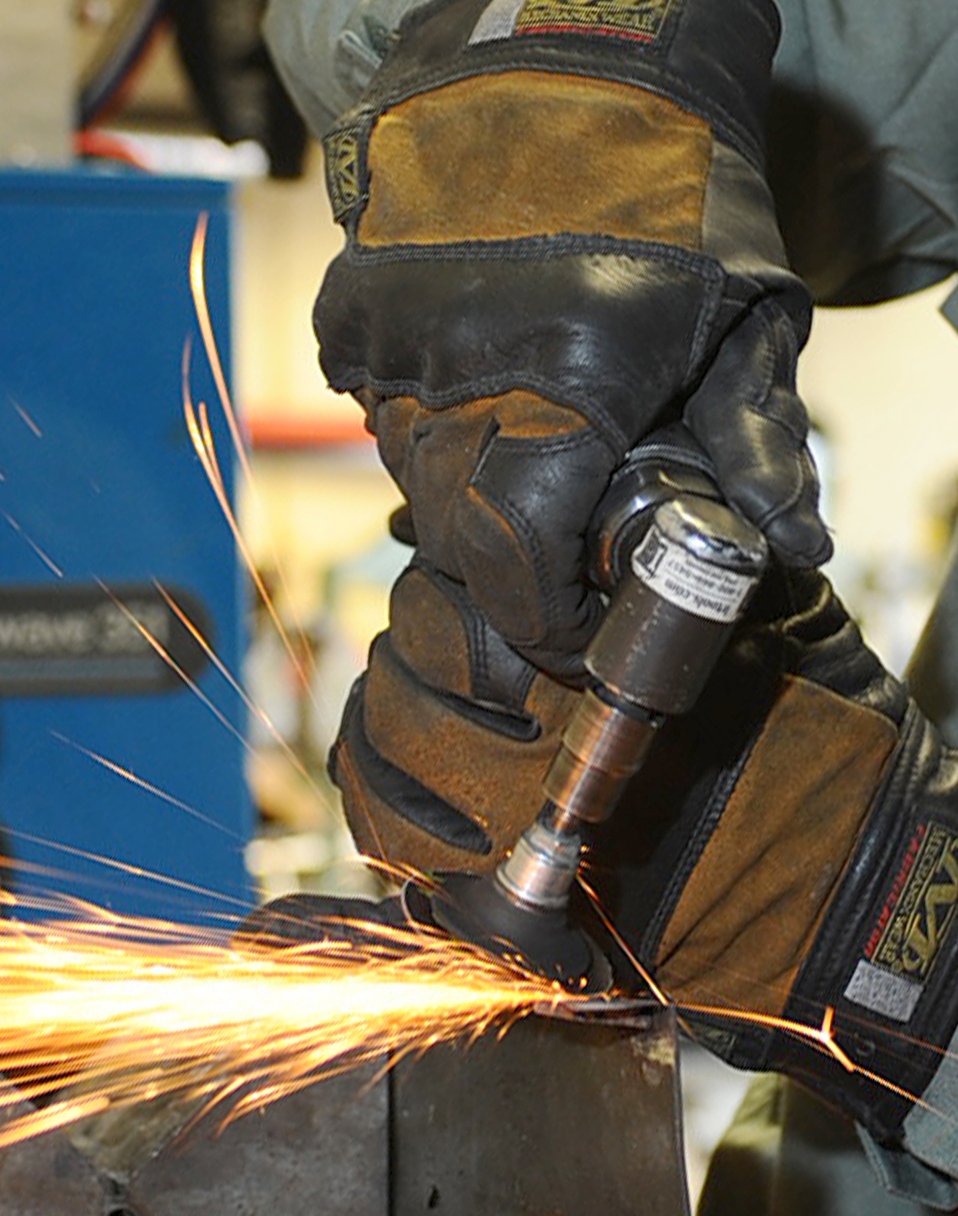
Tungsten inert-gas welding

Airman 1st Class Webb Travis grinds down a weld on a bomb loader panel Jan. 26, 2011, at Ellsworth Air Force Base, S.D. Airman Travis is an aircraft metals technology technician assigned to the 28th Maintenance Squadron.